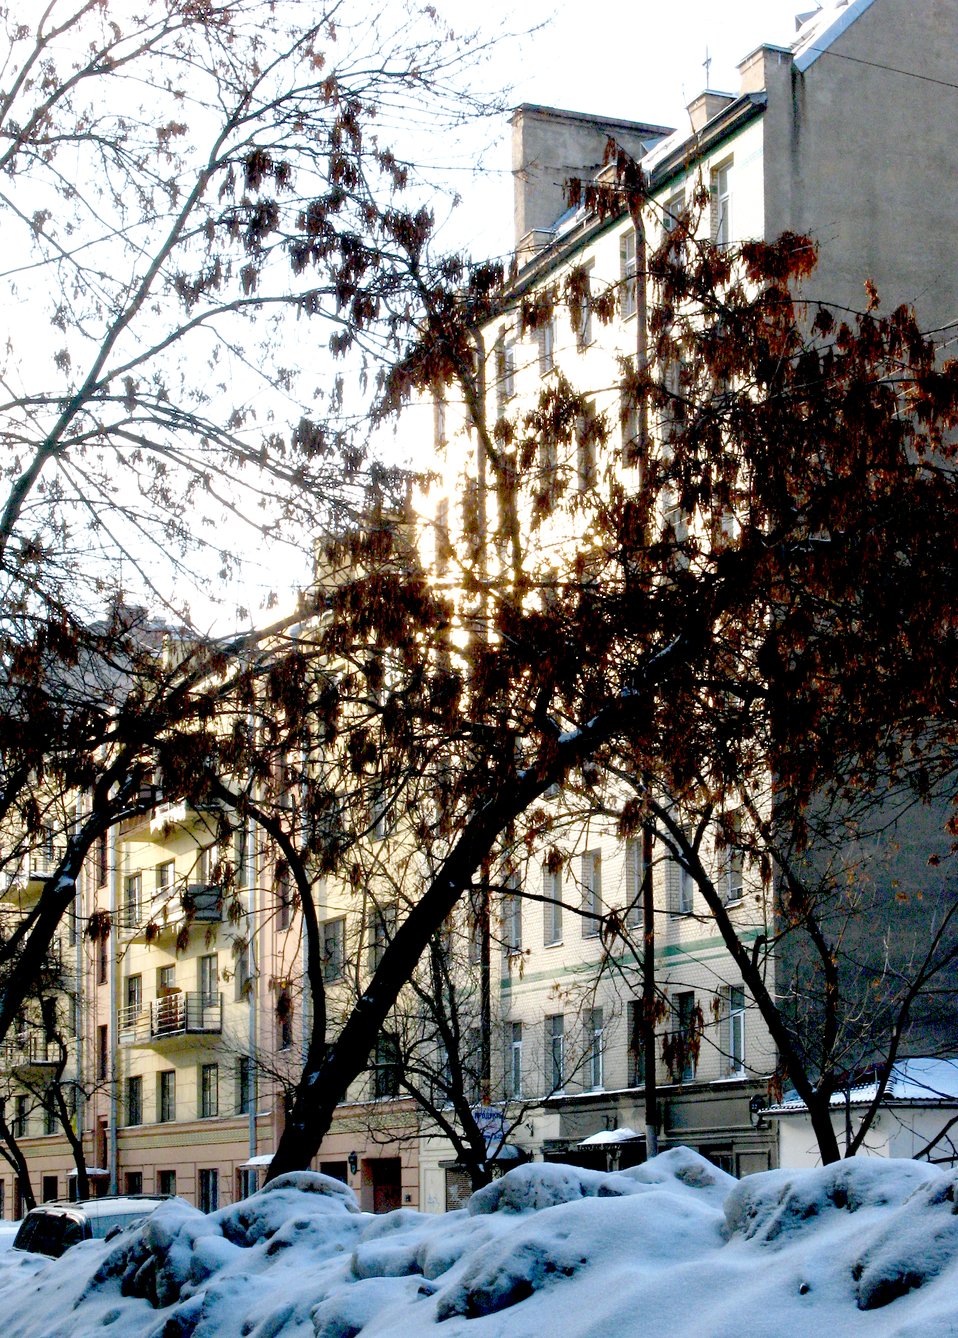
Русский: 15-линия, д. 22 и 20, В.О., Санкт-Петербург, Россия. Building number 22 and 20, 15-line, Vasilievsky Island, Saint-Petersburg, Russia.